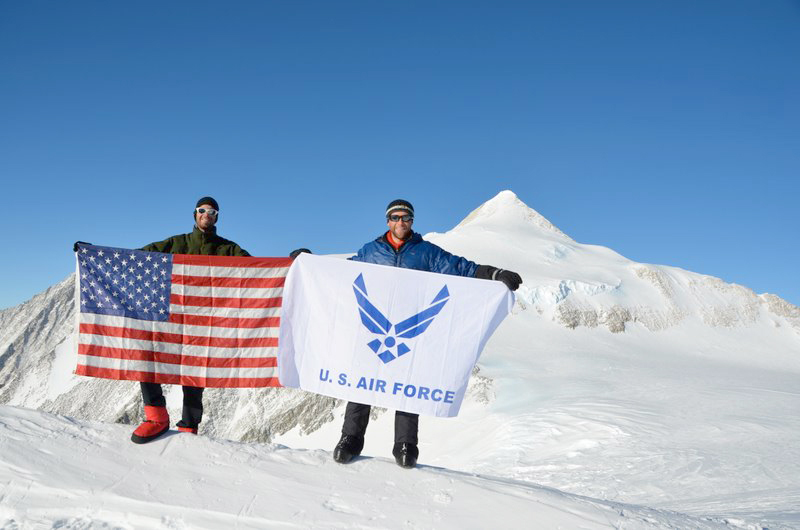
Standing Atop the Bottom of the Earth

The U.S. Air Force Seven Summits team reached Mount Vinson's 16,077-foot summit Dec. 9, 2010. The team has conquered five of the seven continents' highest peaks.